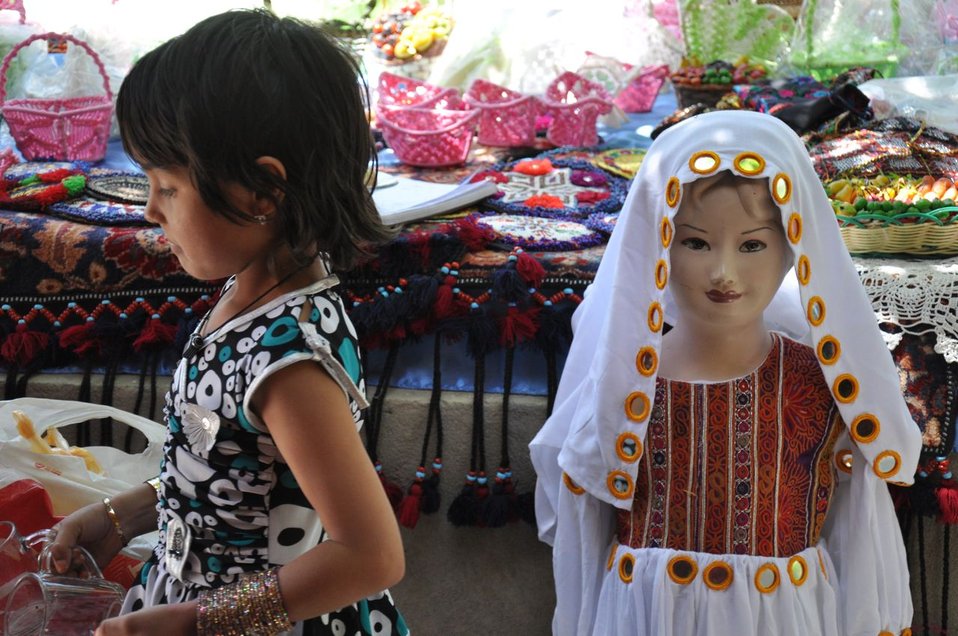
Mother's Day in Afghanistan